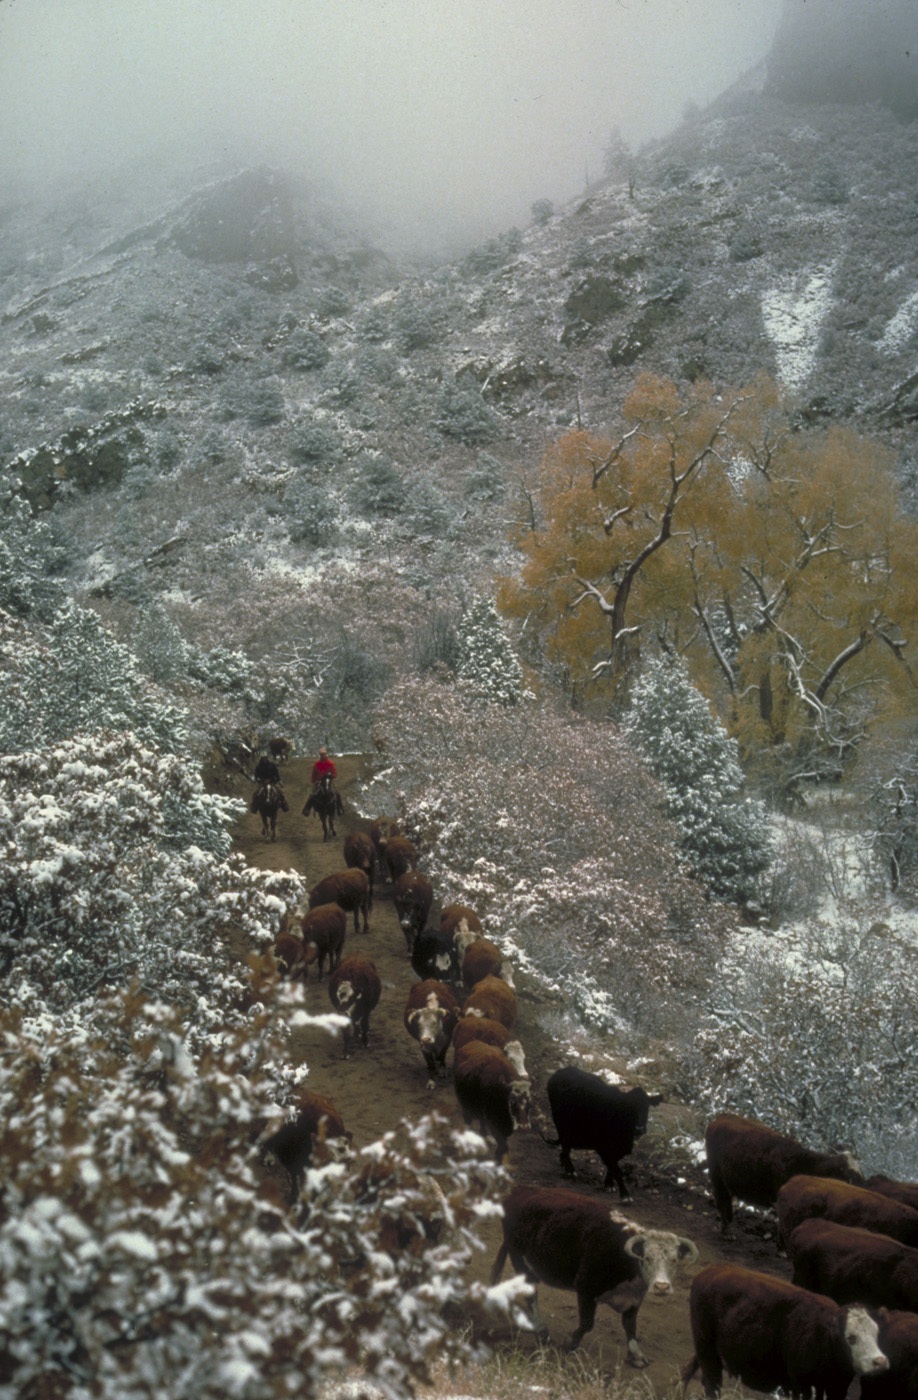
Cattle drive within the Gold BeltTour National Scenic Byway.